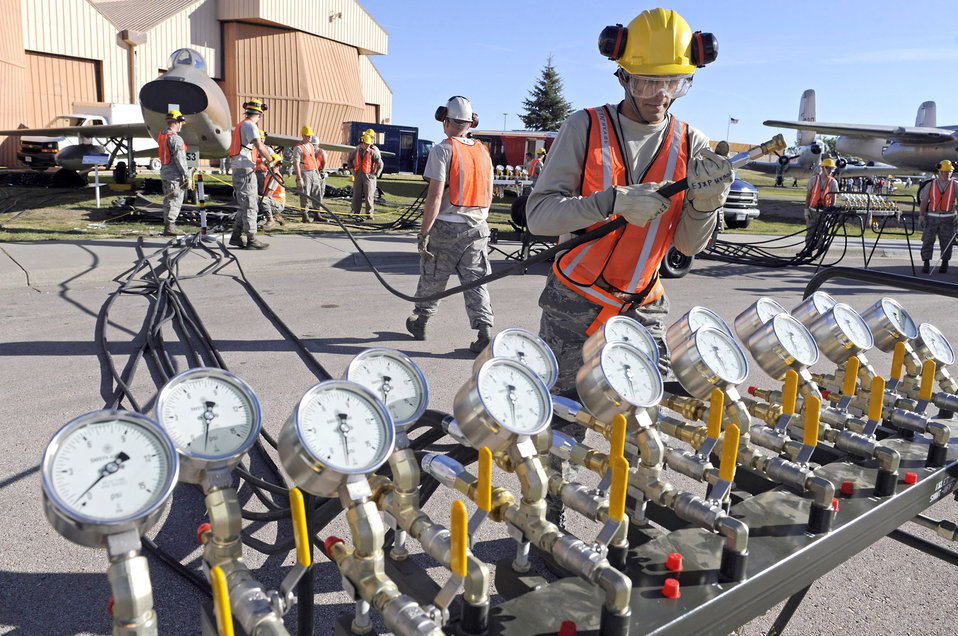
It's a jumble out there

Airman 1st Class Rawlinson Santaella prepares to connect an air hose to a pneumatic manifold Sept. 27, 2010, at Ellsworth Air Force Base, S.D. The hose connects the manifold to pneumatic air bags capable of lifting up to 26 tons. Airman Santaella is a repair and reclamation technician with the 28th Maintenance Squadron.